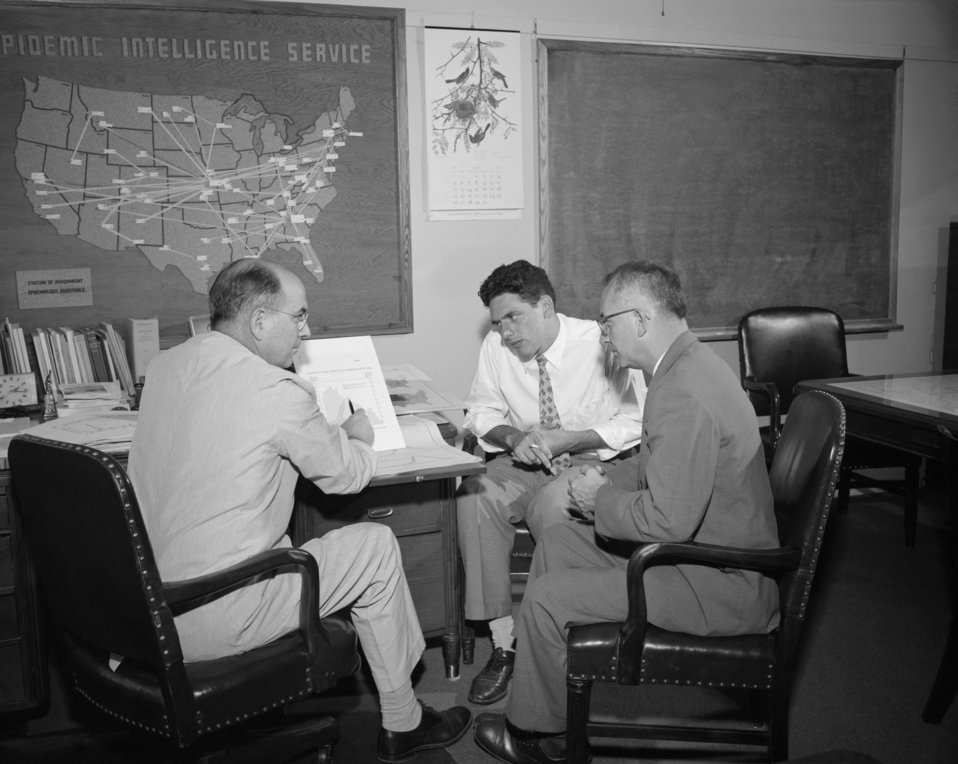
This image taken during the 1950s, depicted these officers from the Epidemic Intelligence Service, EIS, Polio Surveillance Unit, as they were discussing investigative strategies in Dr. Alexander Langmuir's office. Seated on the left was the creator of the EIS, Dr. Langmuir, with Dr. Jack Karush (EIS '54) seated in the center, and CDC statistician Robert Serfling seated on the right.